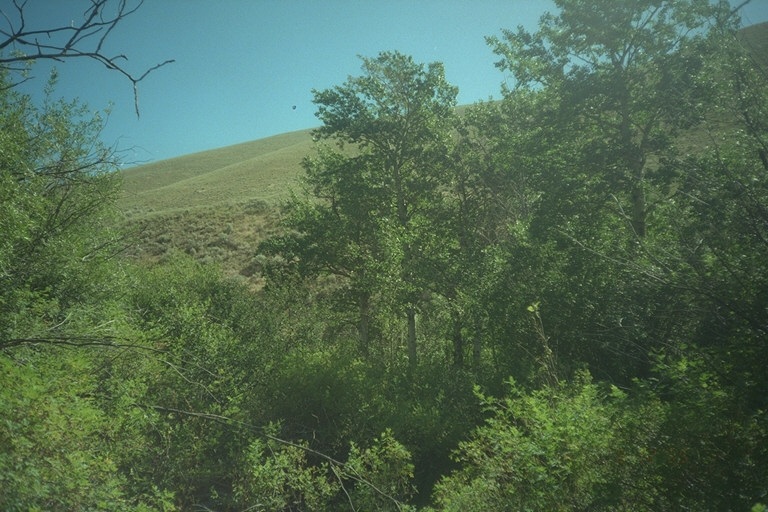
Riparian area Public Lands Salmon Field Office UCSC Upper Columbia Salmon Clearwater District